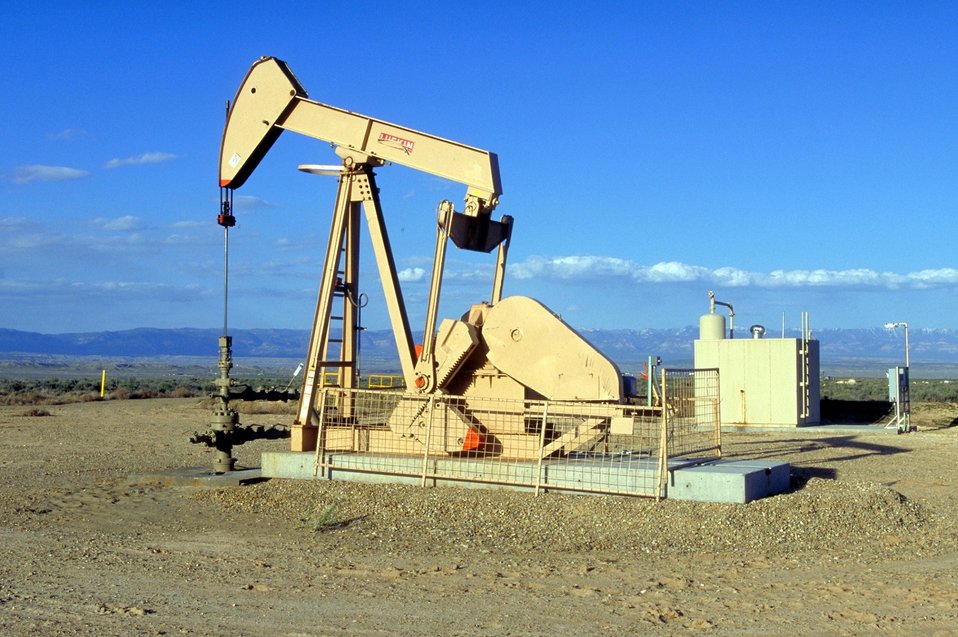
Pump unit producing coal bed methane near Price, Utah.